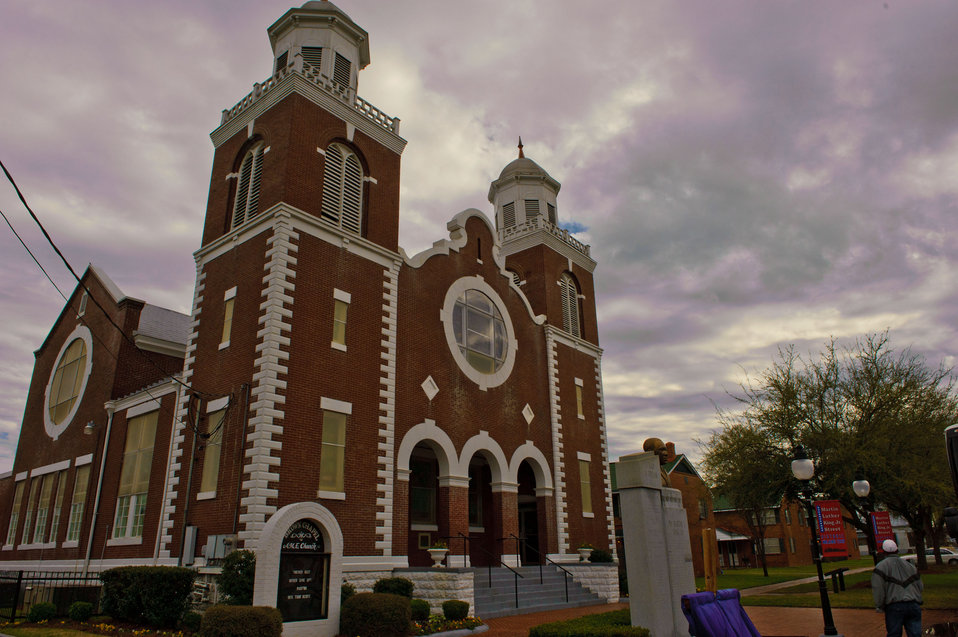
March 4, 2012 Historic Brown Chapel African Methodist Episcopal Church

Both the building and the members of Brown Chapel AME Church played pivotal roles in the Selma, Alabama, marches that helped lead to the passage of the 1965 Voting Rights Act.

National Parks Service links for more information:
Brown Chapel AME Church
Selma to Montgomery March